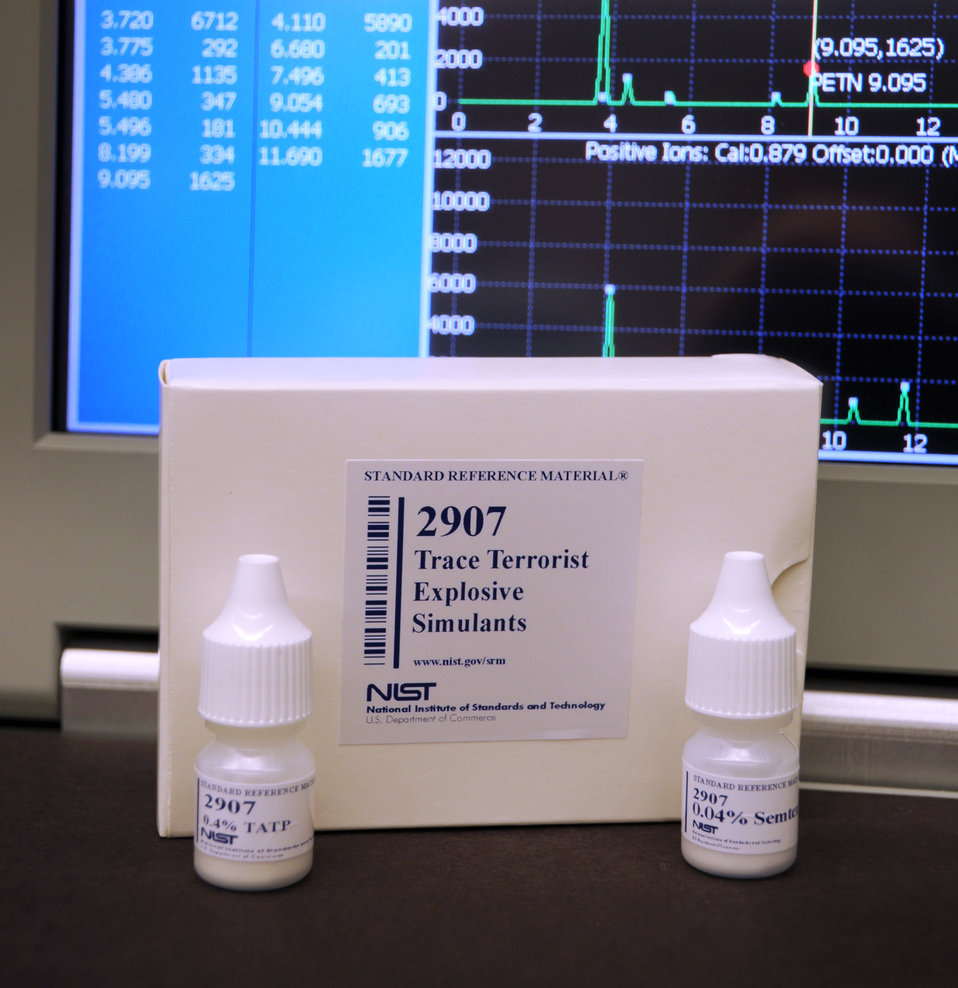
Explosives Traces SRM

The new NIST reference material for explosive traces contains meticulously measured concentrations of the explosives TATP and PETN. The material can be used to test and validate the ability of machines and methods to detect the explosives' presence.